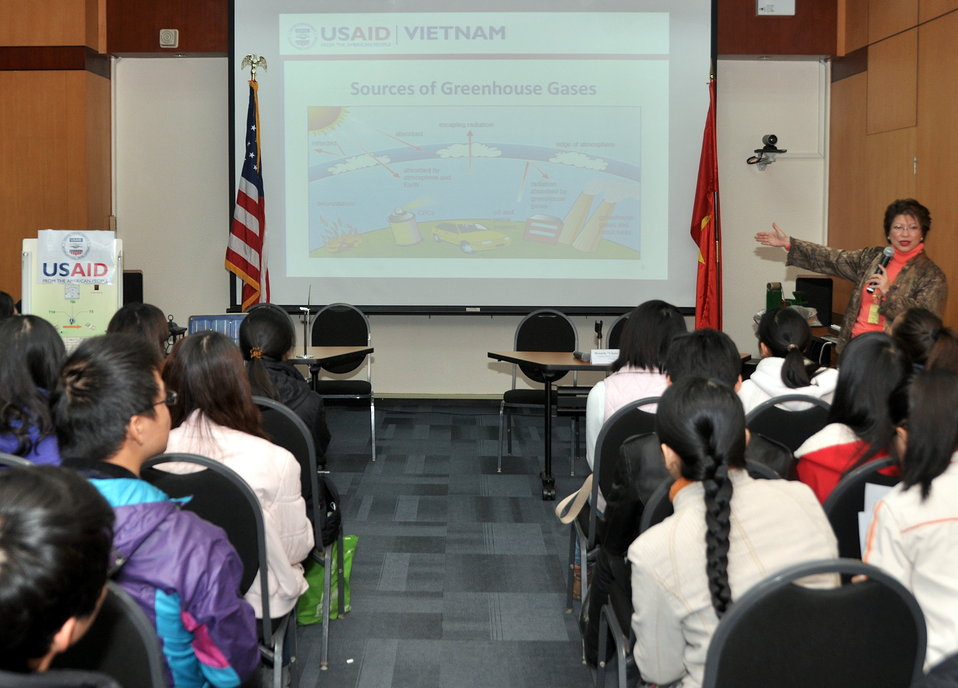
Speaker program on Climate Change and Clean Energy at the American Center

Hanoi, January 16, 2013